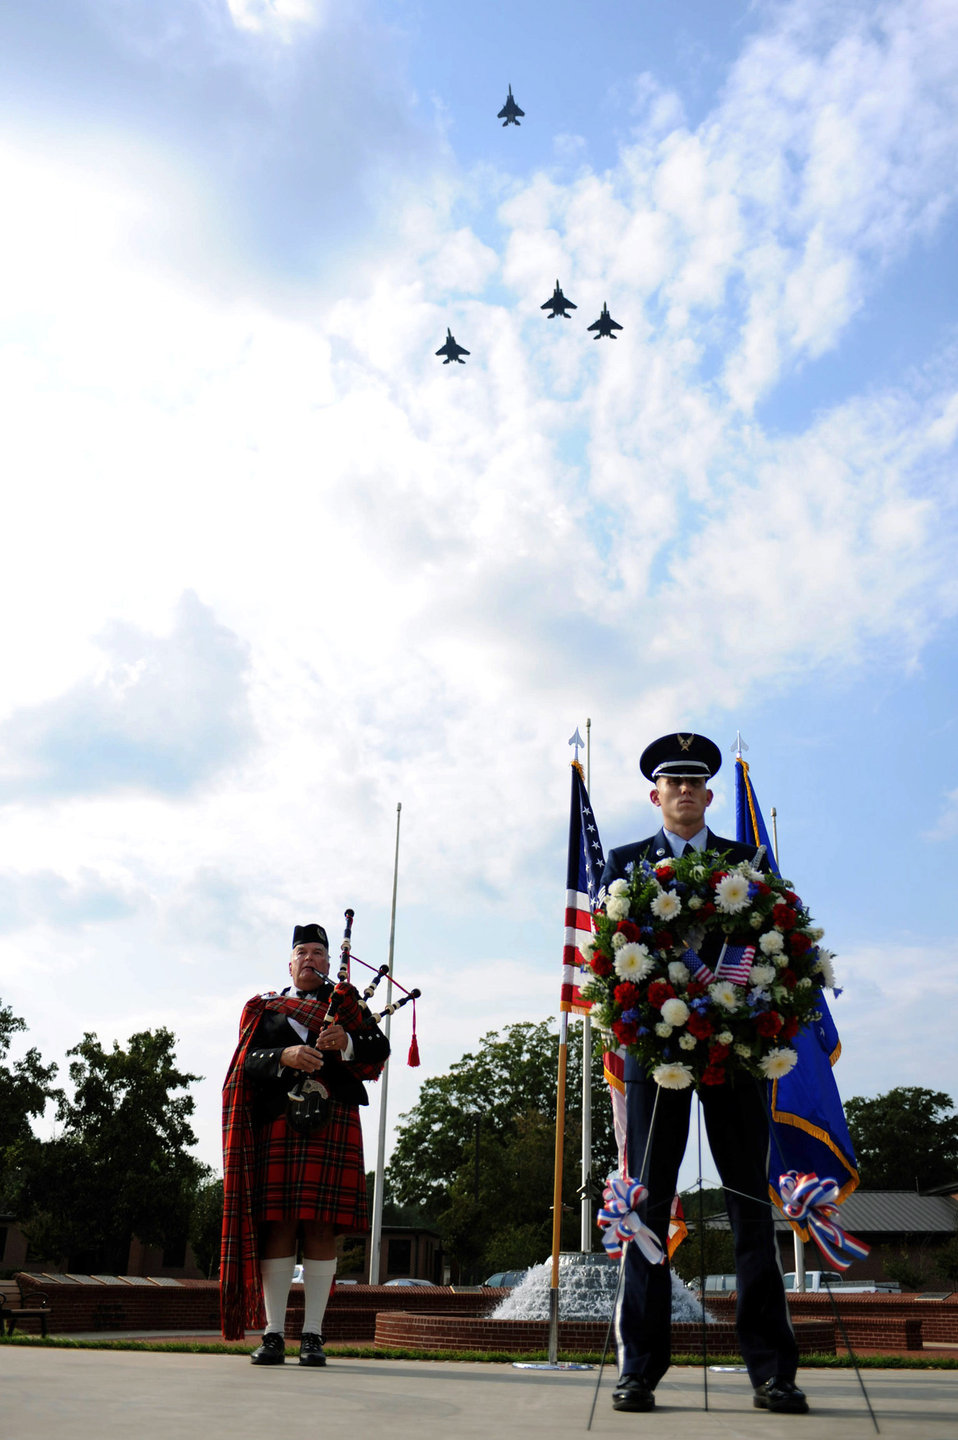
A fitting tribute

Staff Sgt. Jeffery Simmons stands watch by a memorial wreath during the 4th Fighter Wing Prisoners of War/Missing in Action Recognition Ceremony Sept. 17, 2010 at Seymour Johnson Air Force Base, N.C. In the background, retired Lt. Col. Norm Taflinger plays the bagpipes as a missing-man formation flies overhead.